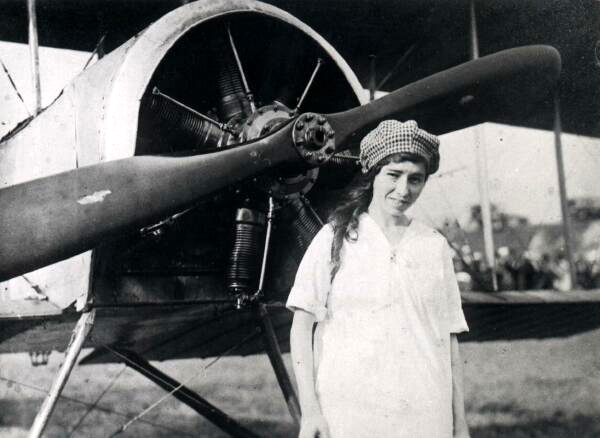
Stinson

FILE PHOTO -- Katherine Stinson became one of the top pilots of her day and set many aviation firsts.